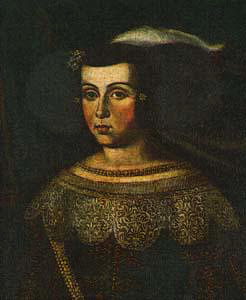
22- Rainha D. Luísa